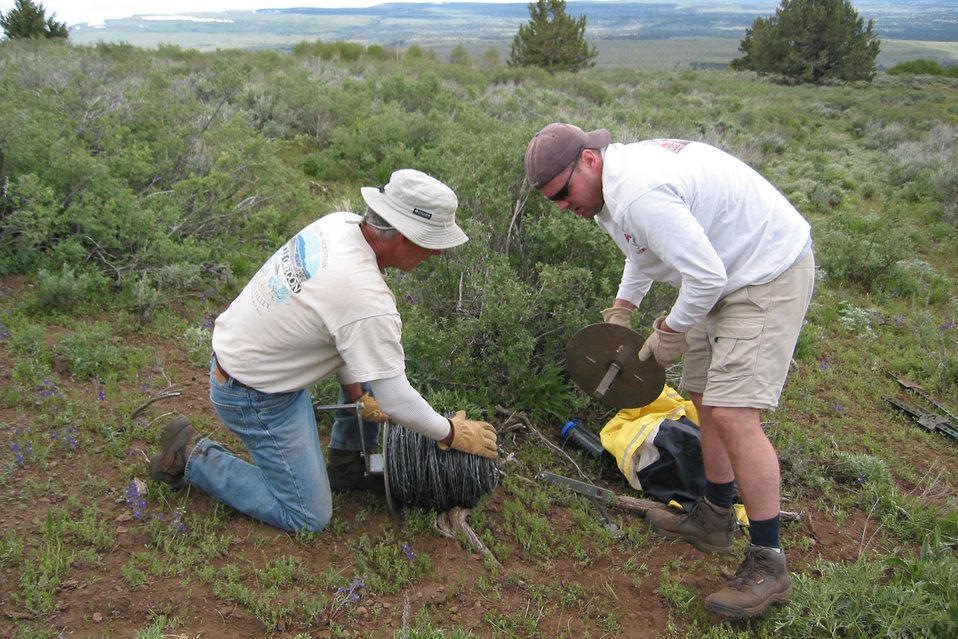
Volunteers work with BLM to remove over a 100 miles of old fence.